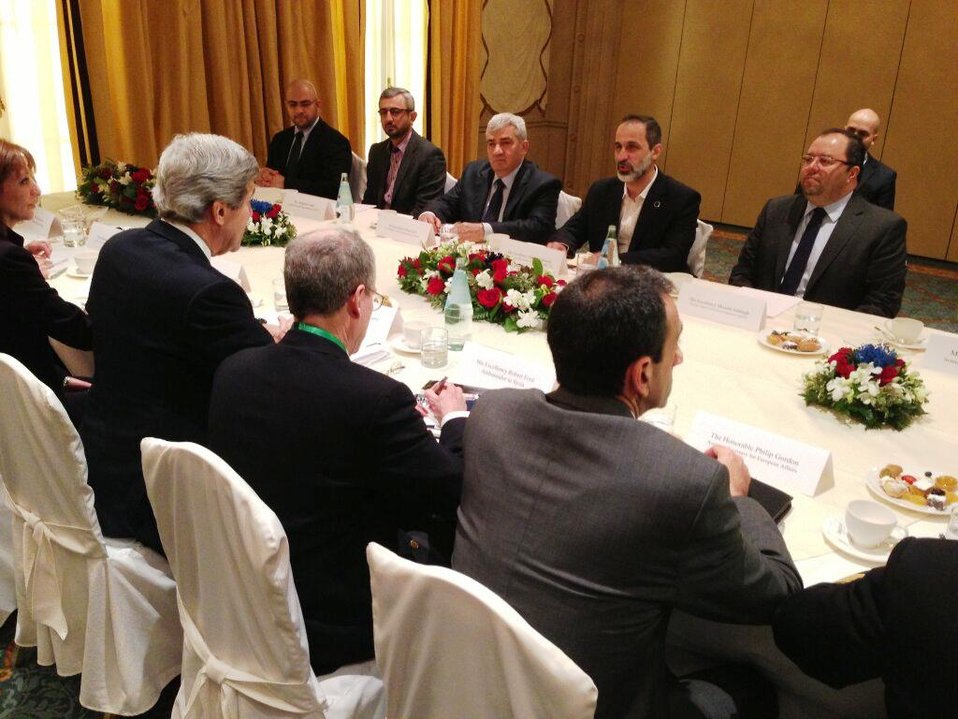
Secretary Kerry Meets With Syrian Opposition Leaders

U.S. Secretary of State John Kerry, accompanied by U.S. Ambassador to Syria Robert Ford, seated to the right of the Secretary, meets with Syrian Opposition Leaders in Rome, Italy, on February 28, 2013.